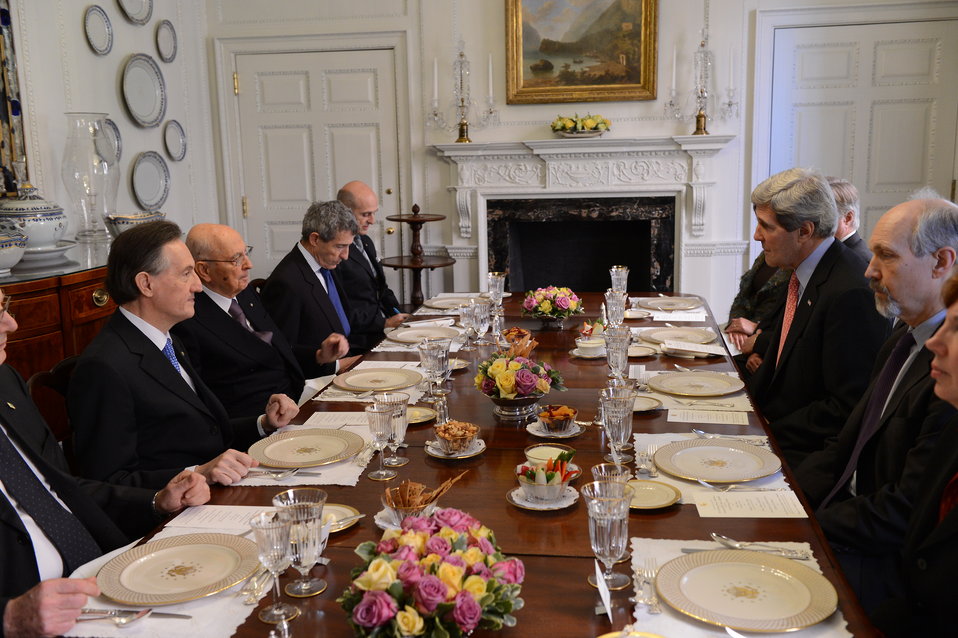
Secretary Kerry Hosts a Working Lunch With Italian President Napolitano

U.S. Secretary of State John Kerry hosts a working lunch with Italian President Giorgio Napolitano at the Blair House in Washington, D.C., February 15, 2013.